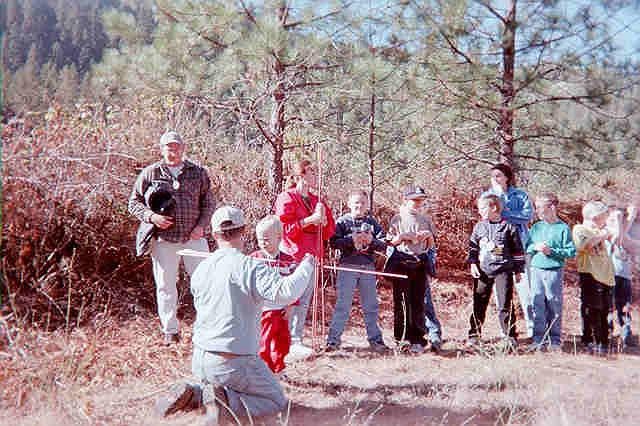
Public Lands Day atlatl demonstation by Dave Mathweg.